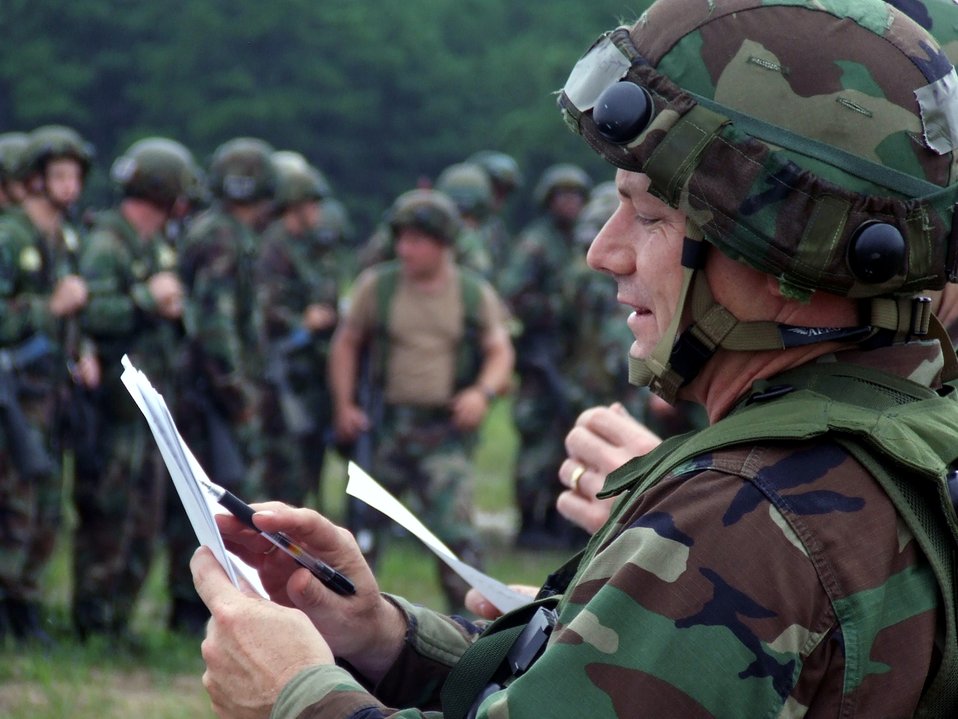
Eagle Flag tests combat support skills

Airmen deployed with the fictional 421st Air Expeditionary Group form up for a roll call during operations Aug. 26 for Air Force Exercise Eagle Flag 07-6 at Naval Air Engineering Station Lakehurst, N.J. The exercise is operated by the Air Force Expeditionary Center's 421st Combat Training Squadron from Fort Dix, N.J.